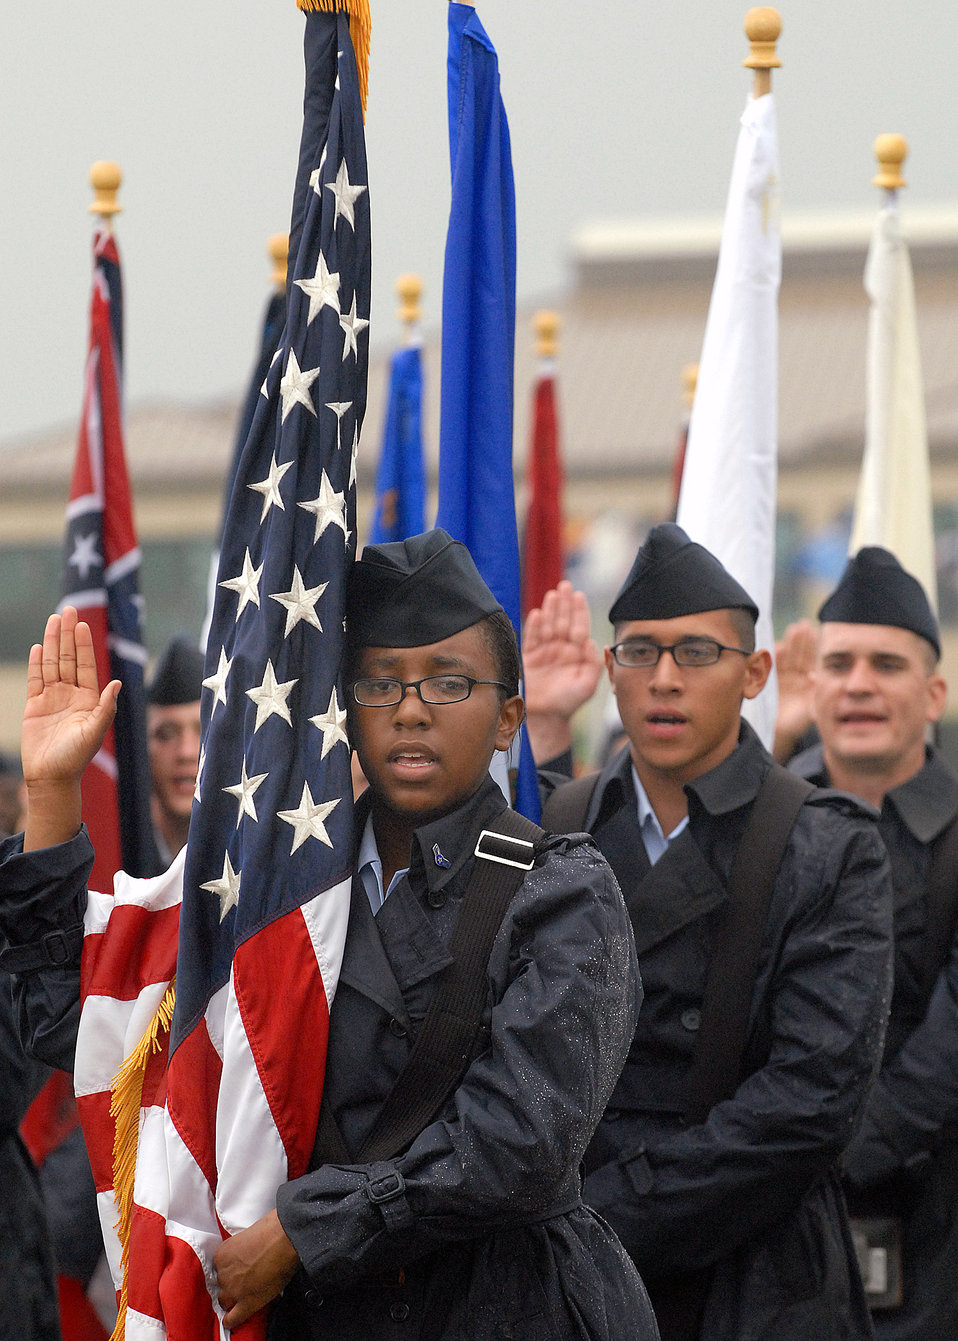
Taking the oath

Despite a heavy downpour, Airman from the 326th Training Squadron Flights 261 and 262 stand and recite the oath of office as new graduating Airman from basic military training April 13 at the Lackland Air Force Base parade field in San Antonio.